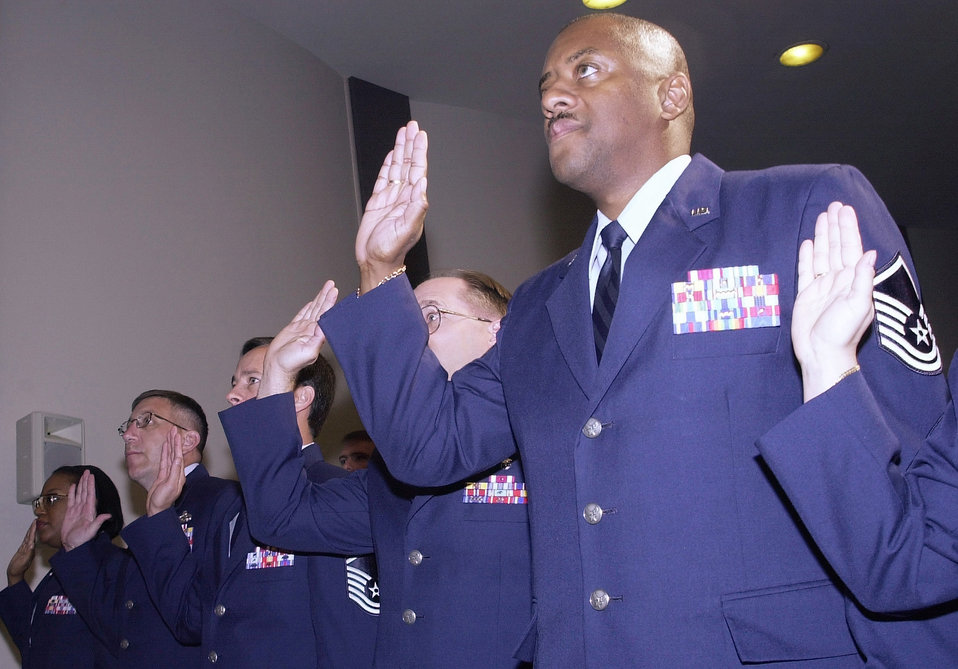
The oath

WASHINGTON -- In honor of the Air Force's 54th anniversary, Chief of Staff of the Air Force Gen. John P. Jumper administers the oath of appointment to 54 airmen, ranging in ranks from senior airman to chief master sergeant, gathered in the Pentagon auditorium for a special reenlistment ceremony on Sept. 17, 2001. Co-host Secretary of the Air Force Dr. James G. Roche then presented his coin to each of the reenlistees.